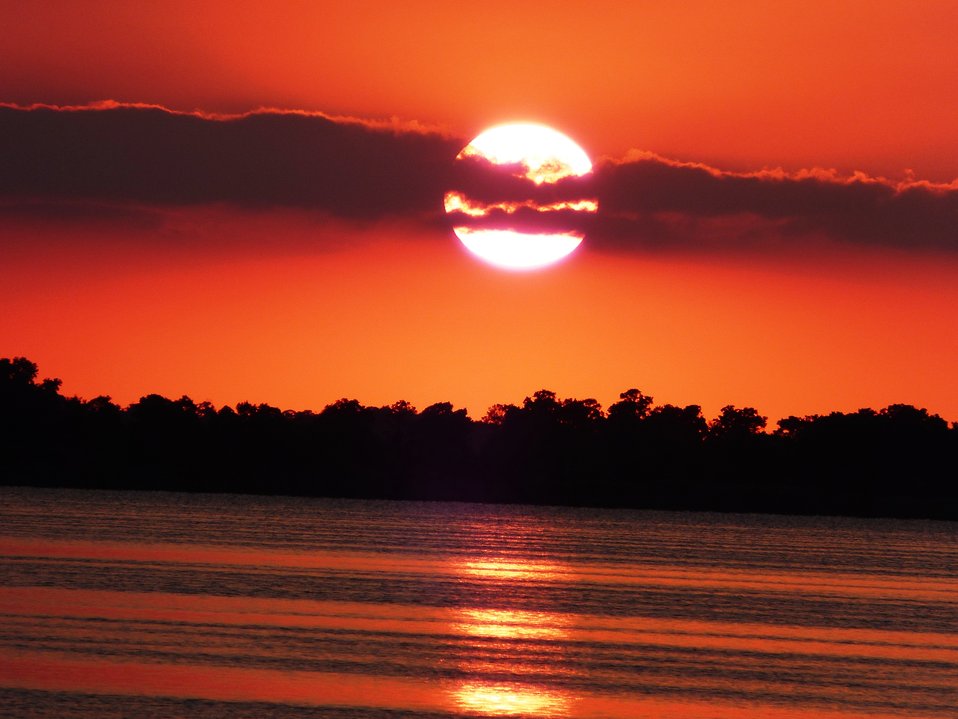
Orange sunset

At Mattamuskeet National Wildlife Refuge in North Carolina.